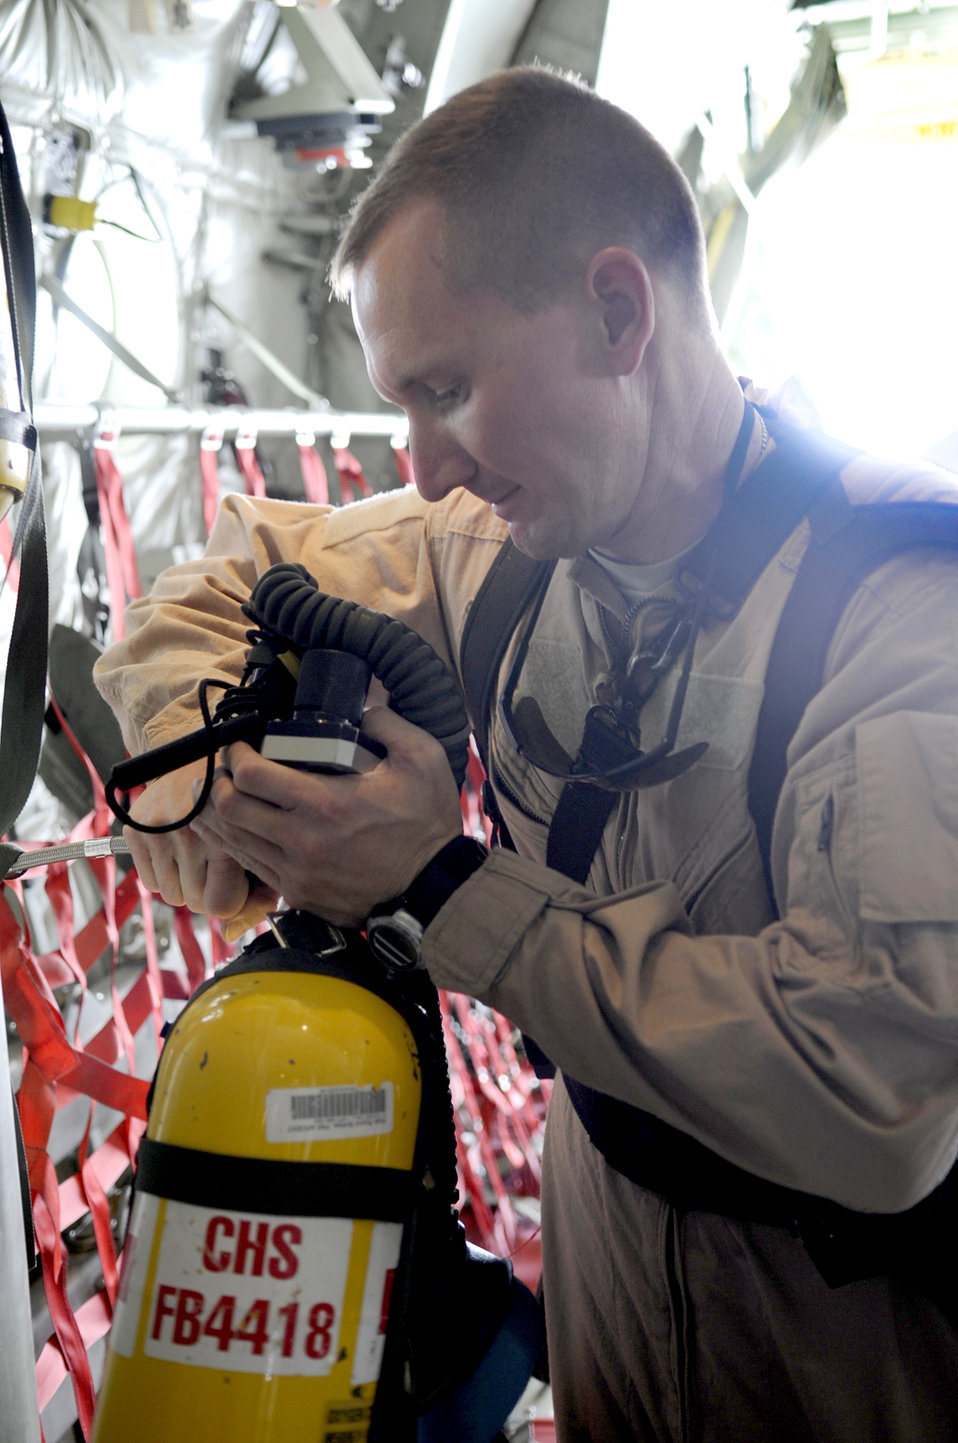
Aeromedical evacuation missions

Maj. David Bailey refills an emergency oxygen tank prior to take off on an aeromedical evacuation mission June 9 at Kandahar Airfield, Afghanistan. Major Bailey is assigned to the 451st Expeditionary Aeromedical Evacuation Squadron.